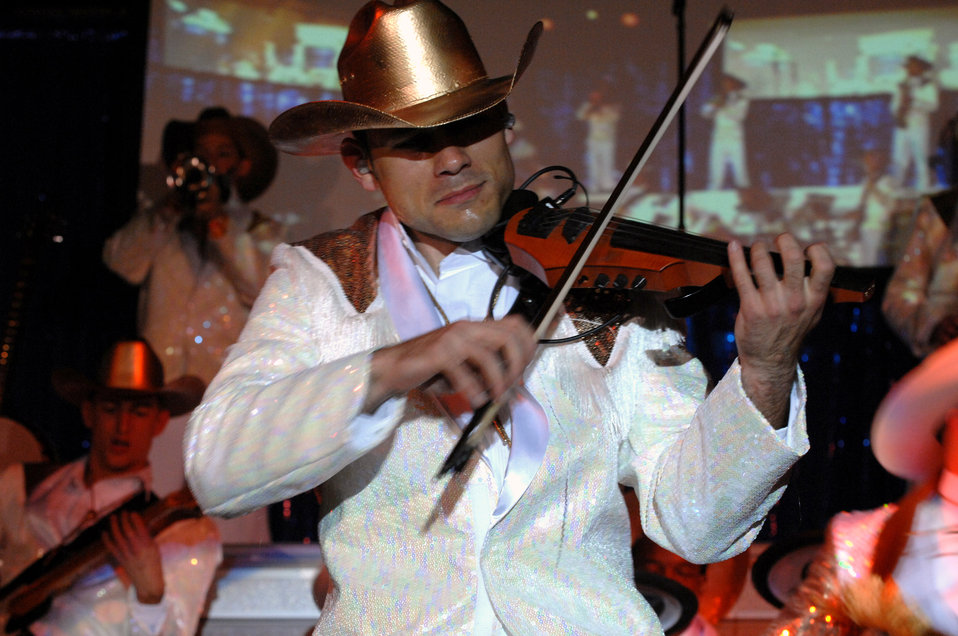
Tops in Blue Airmen strut their stuff

A Tops in Blue Airman plays the violin before a May 24 crowd at the Tays Center near Holloman Air Force Base in Alamogordo, N.M. The 40-member group's goal is to enhance mission productivity for Air Force members around the world. Tops In Blue Airmen perform an average of 120 performances at 100 locations worldwide each year members around the world. Tops in Blue showcases music, dance and comedy, all performed by active-duty Airmen who perform 90 minutes of non-stop live entertainment.